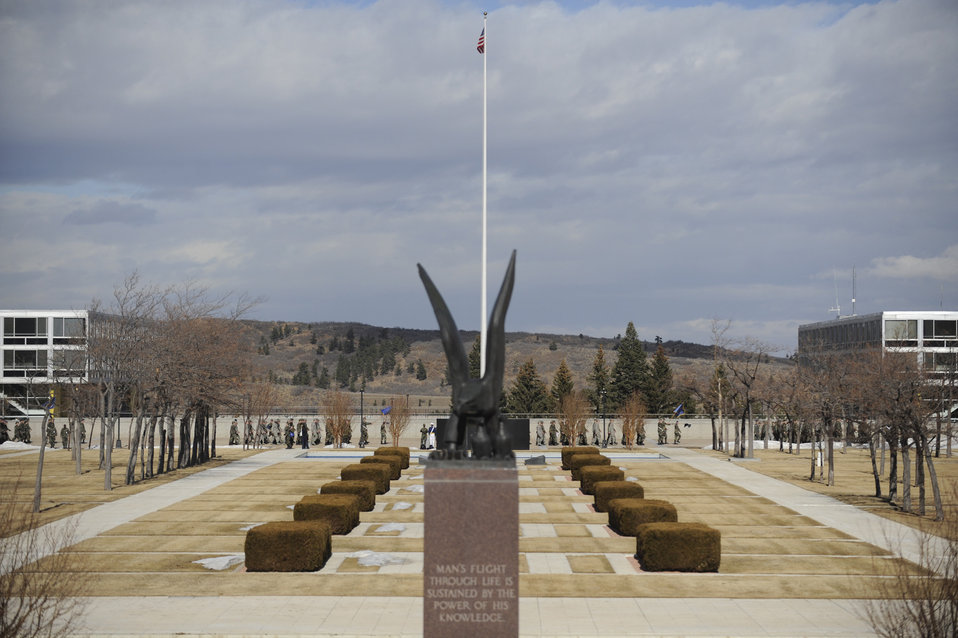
U.S.Air Force Academy Mitchell Hall Cadet Dining Facility

At the far end of the plaza at the U.S. Air Force Academy in Colorado Springs, Colo., cadets march to Mitchell Hall Cadet Dining Facility Jan. 23. The dining facility feeds approximately 4450 cadets and sits on 1.75 acres.